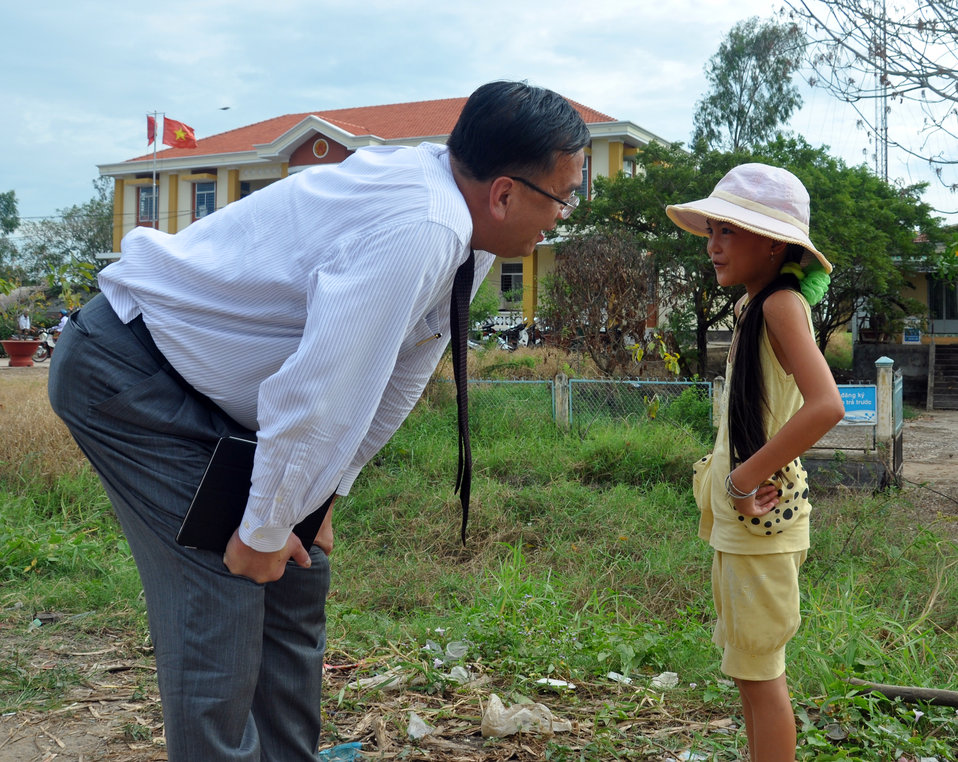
U.S. Consul General Le An visits USAID beneficiaries

USAID site visit to Long An Province to visit flood relief beneficiaries